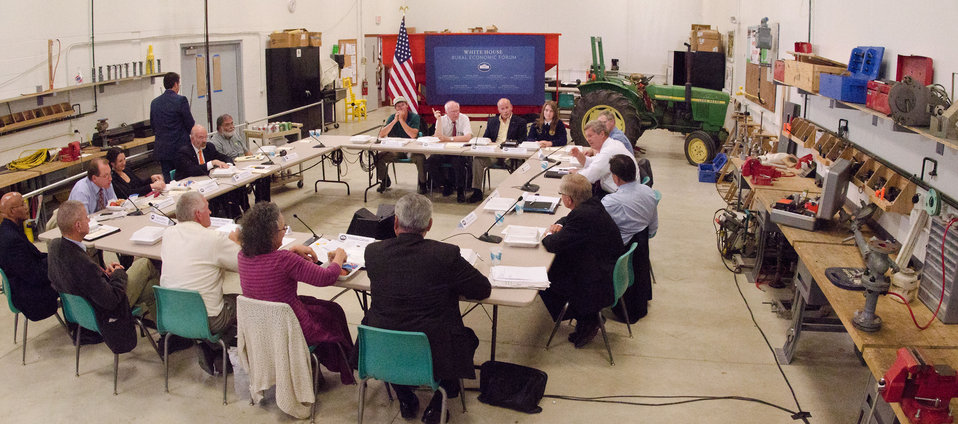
U.S. Department of Agriculture Secretary and chair of the White House Rural Council, Tom Vilsack, (right center) meets with Iowa stakeholders at the Northeast Iowa Community College, IA, during the White House Rural Economic Forum, on Tuesday, August 16, 2011.